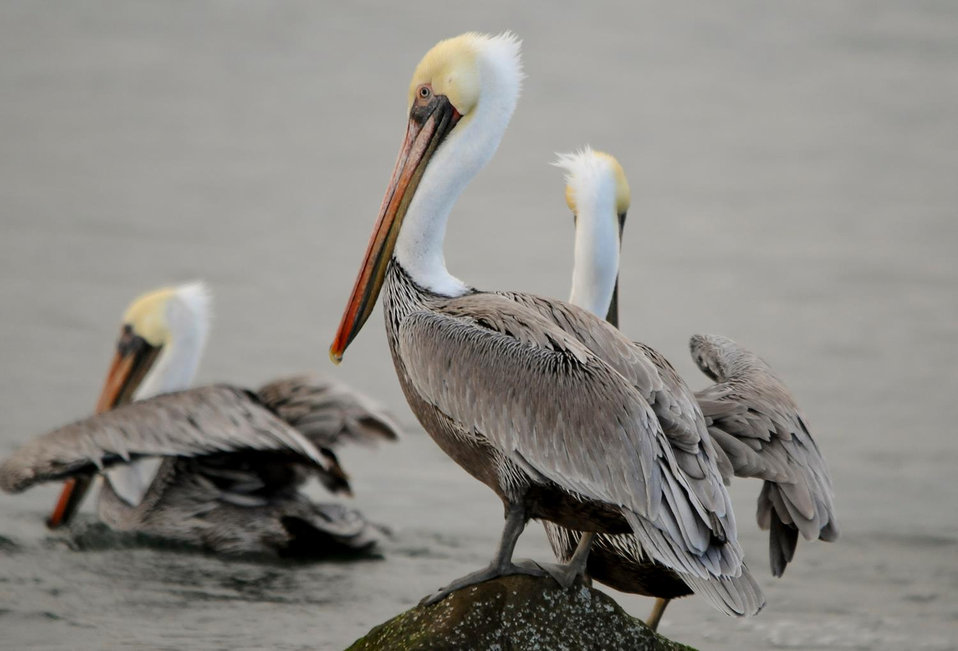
pelicans overwintering at Oregon Coast NWR

Oregon Coast National Wildlife Refuge
November 2011